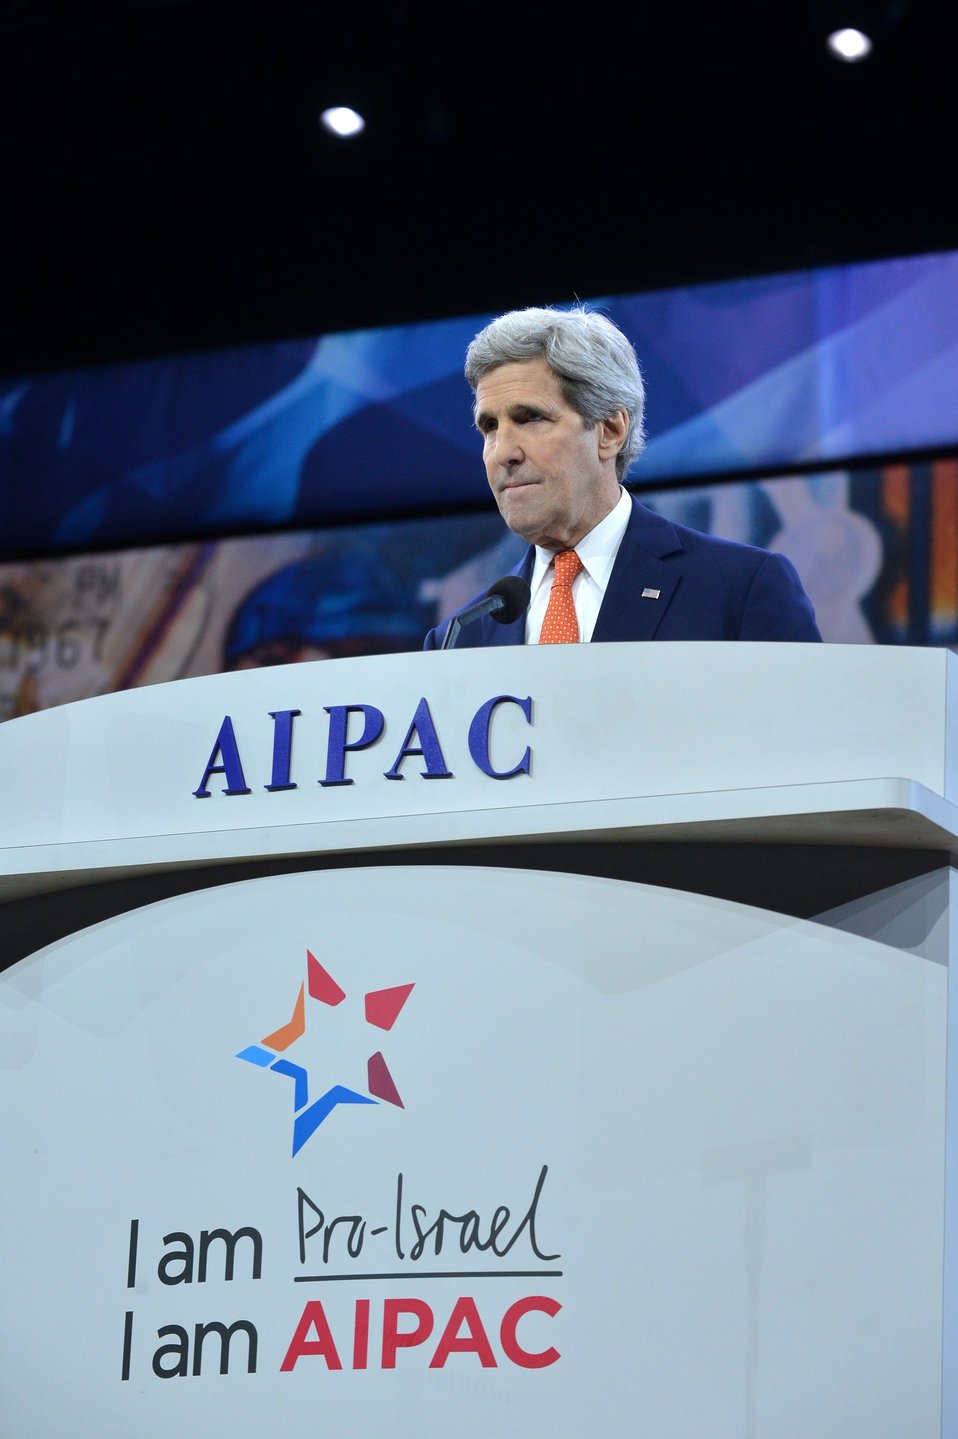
Secretary Kerry Delivers Remarks at the American Israel Public Affairs Committee Conference

U.S. Secretary of State John Kerry delivers remarks at the American Israel Public Affairs Committee (AIPAC) Conference at the Washington Convention Center in Washington, D.C., on March 3, 2014.